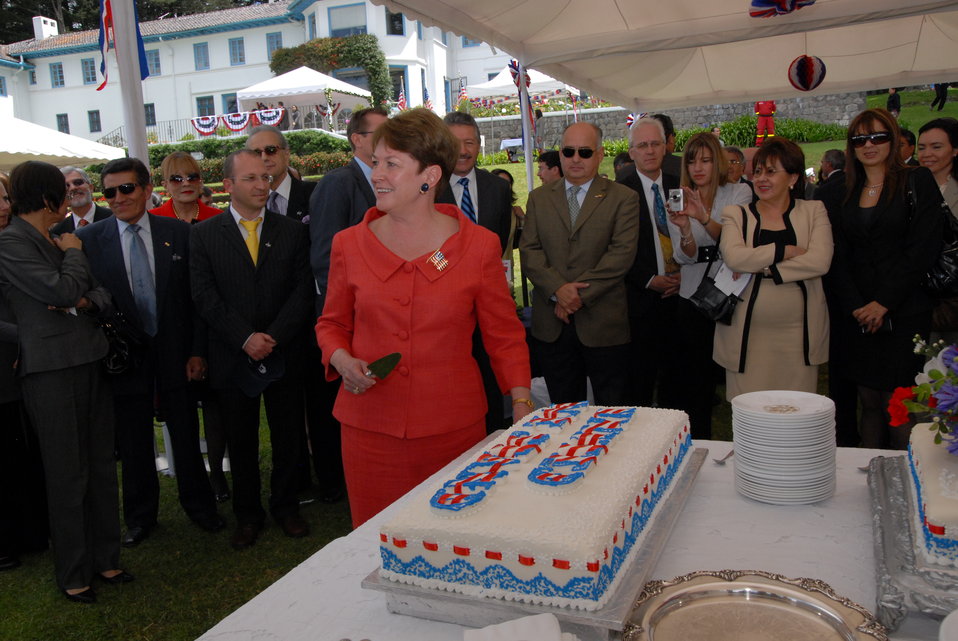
July 4th Celebration at U.S. Embassy in Ecuador

U.S. Ambassador to Ecuador Heather Hodges cuts the cake at the U.S. Independence Day celebration in Quito, Ecuador, on July 2, 2010.